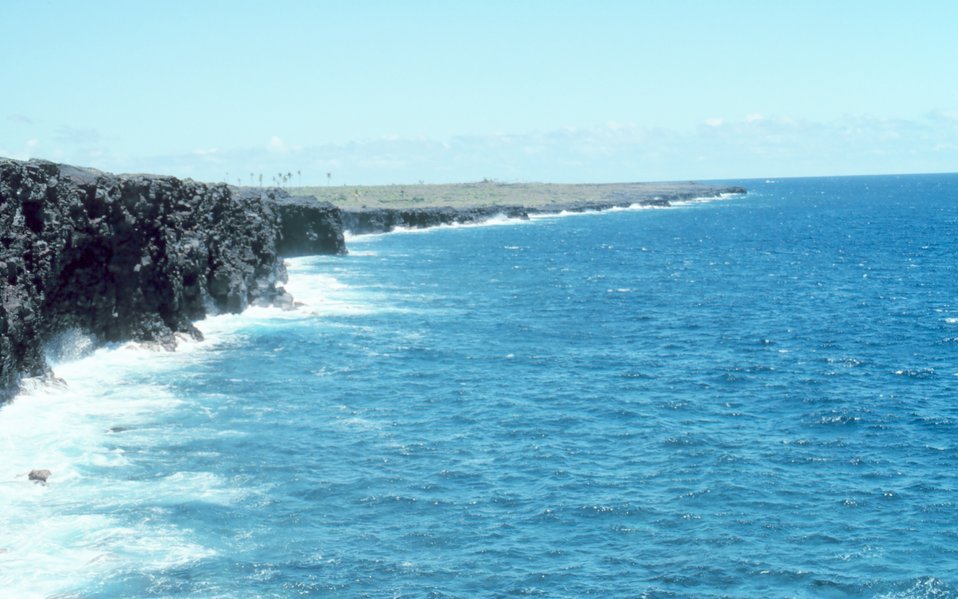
Black lava cliffs in the Kamoamoa area along southeast coast near Kilauea